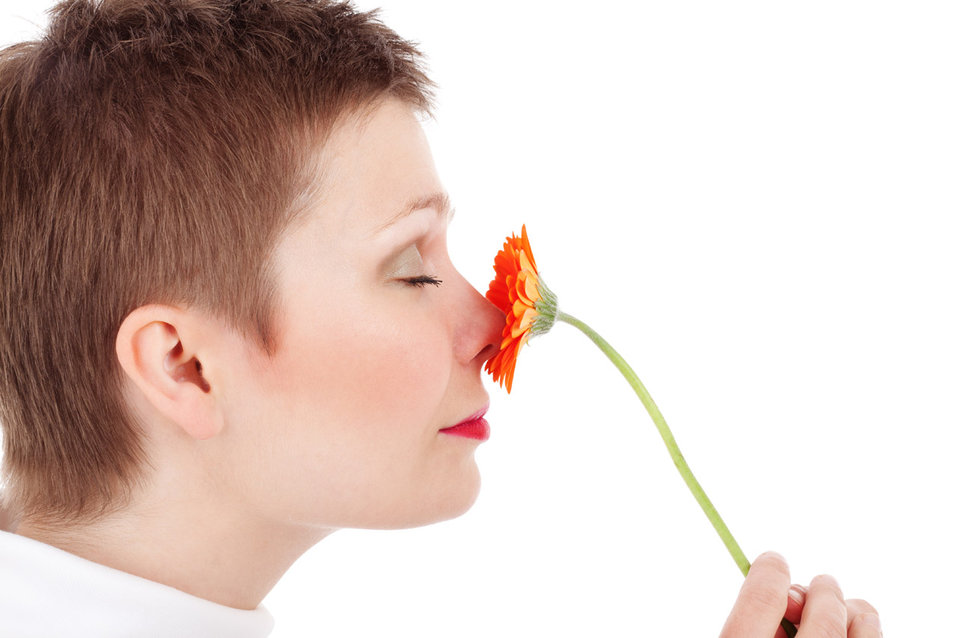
Woman smelling flowers

Young woman smelling flowers isolated on white background.